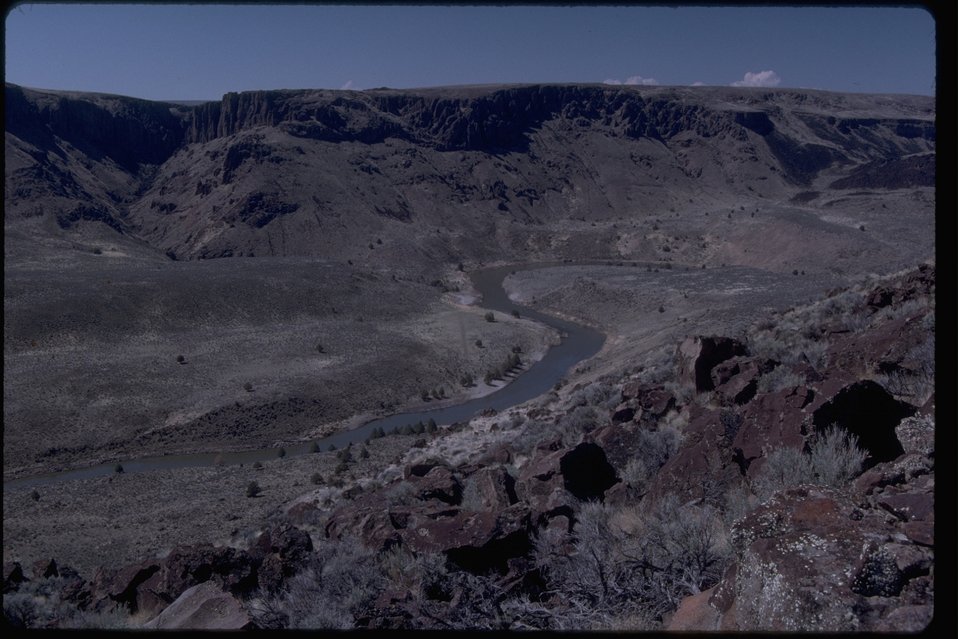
Rim rock view of the Owyhee Canyon. OR 3-195